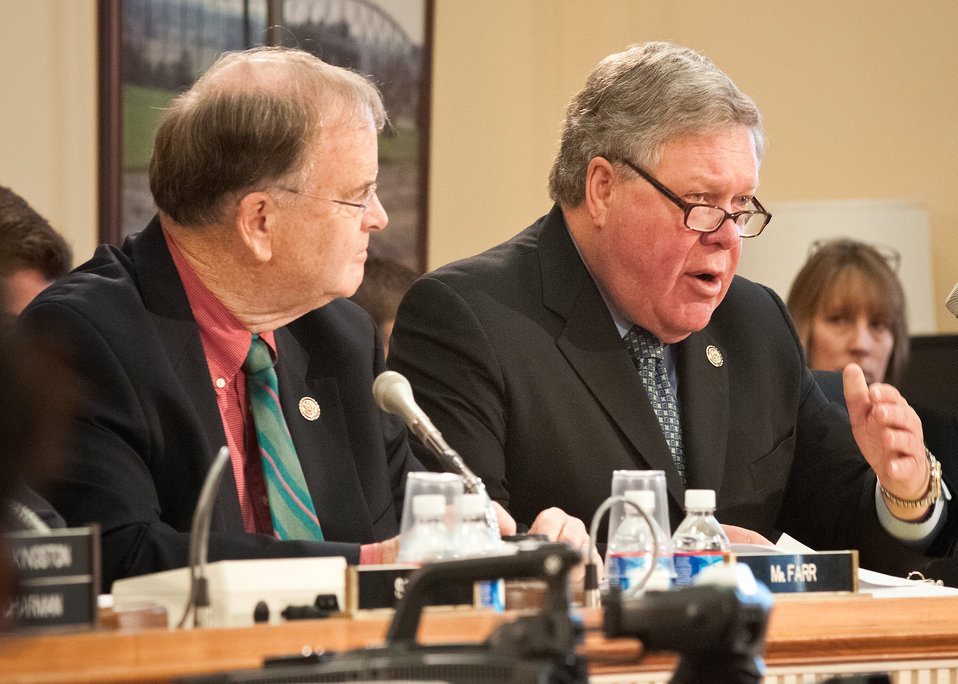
Congressmen Sam Farr, California and Norm Dicks, Washington ranking members of the House Agriculture Appropriations Committee posed questions to Agriculture Secretary Tom Vilsack and members of his sub-cabinet during a House Agriculture Appropriations Committee meeting to discuss the United States Department of Agriculture budget in the Rayburn House Office Building on Friday, February 17, 2012 in Washington, D.C.